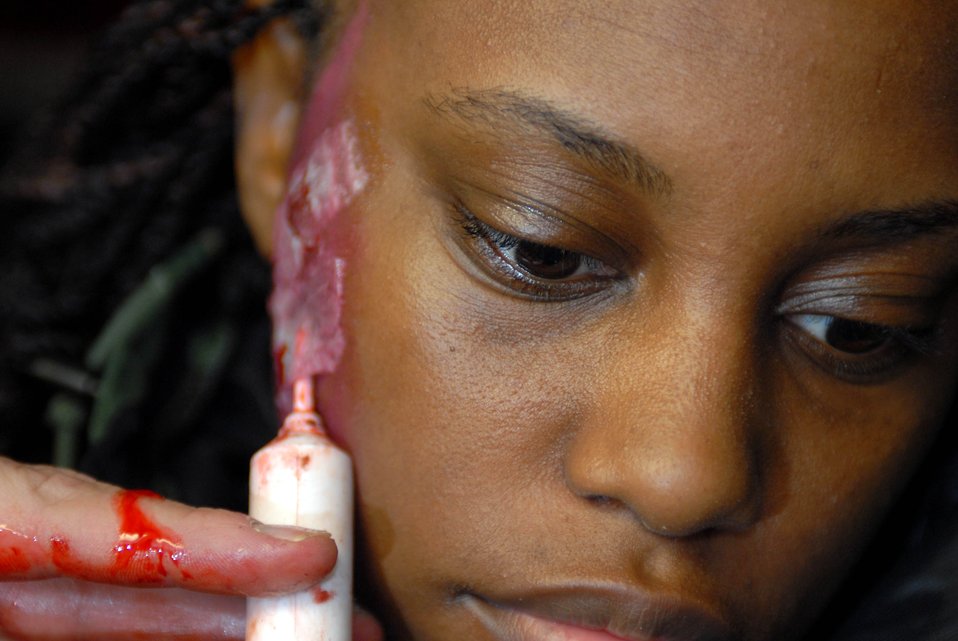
Squadron deployment tests Kunsan's readiness

Senior Airman Natesha Adams prepares for a mass causality scenario during the peninsula-wide operations readiness exercise Jan. 16 at Kunsan Air Base, South Korea . This training scenario between the South Korean military and 8th Medical Group Airmen and demonstrates the teamwork necessary to carry out the combined mission of the two allies stationed at Kunsan AB. Airman Adams is assigned to the 8th MDG.